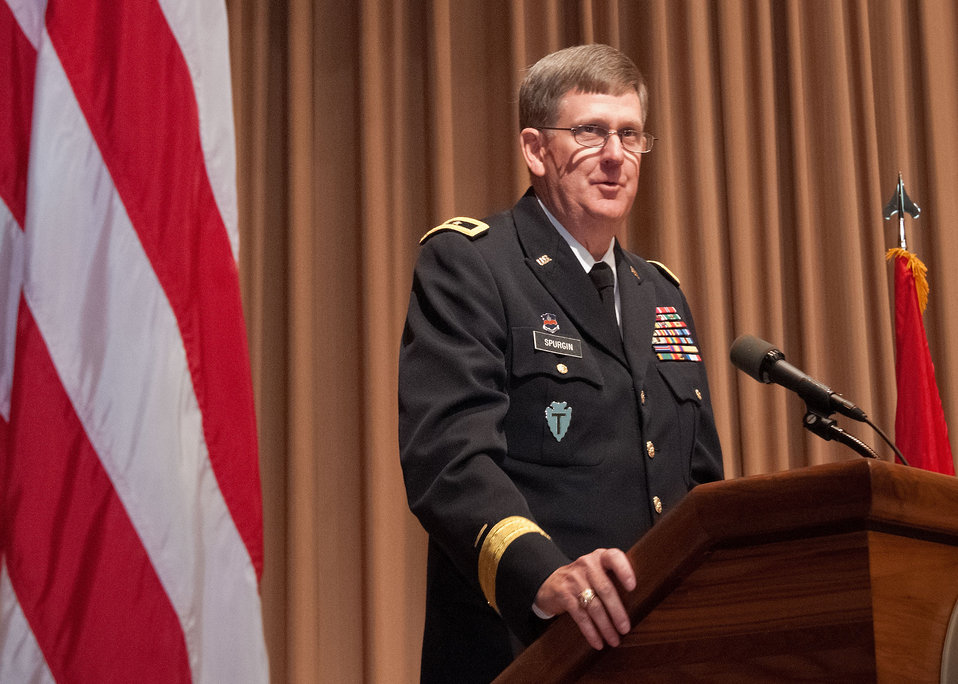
Master of Ceremony Major General Eddy M. Spurgin (Ret.) MG(R) opens the U.S. Department of Agriculture Veterans Day Observance: Honoring All Who Served, in Washington, D.C. on Wednesday, Nov. 7, 2012. Spurgin currently serves as the District Conservationist, Natural Resources Conservation Service in Big Spring, Texas. He served over 30 years in the Texas Army National Guard and commanded from the company level to Division Commander. He recently commanded the 36th Infantry Division, Texas Army National Guard from April 2009 to January 2012 and served as the Commanding General, United States Division-South in Basra, Iraq from 2 Jan 2011 to 7 Sept 2011, during OPERATION NEW DAWN.